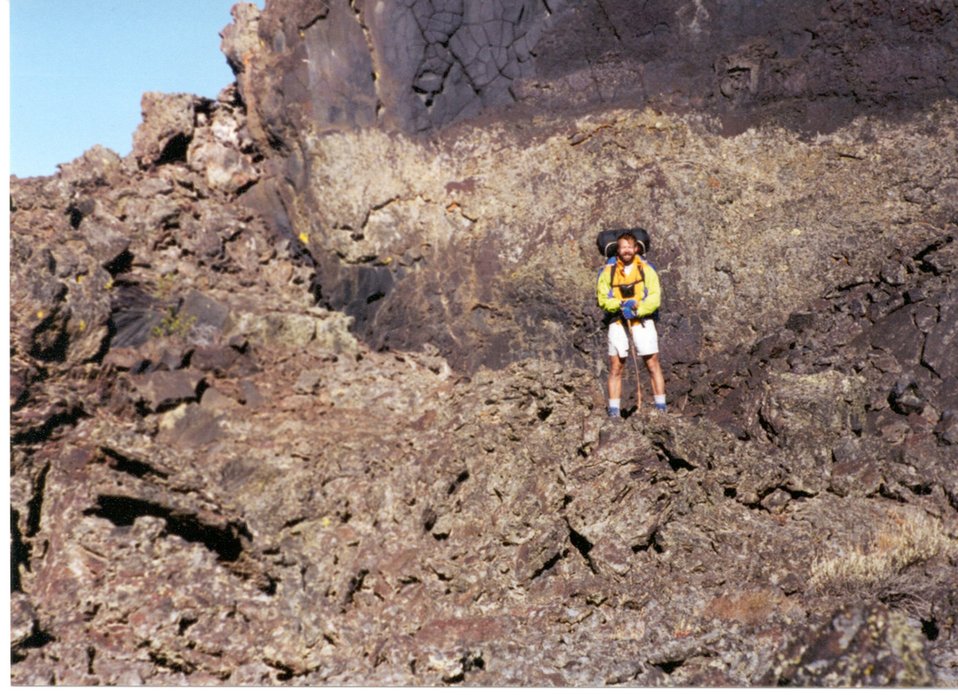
Devils Cauldron Craters of the Moon Shoshone Field Office USRD Upper Snake River District